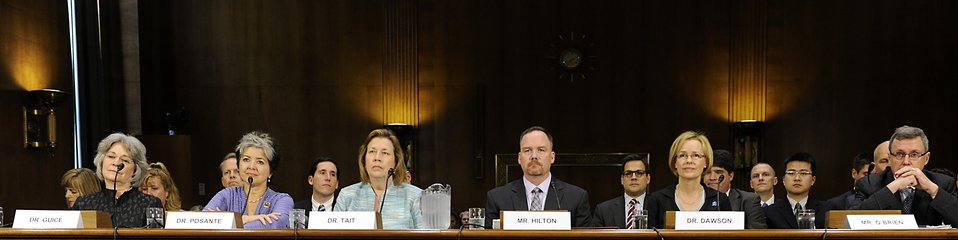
Air Force spouse testifies on military families with special needs

Witnesses testify before the U.S. Senate Armed Services Subcommittee on Personnel in Washington, D.C., June 21, 2012. From the left are Dr. Karen Guice, the principal deputy assistant secretary of defense for health affairs and principal deputy director of the TRICARE Management Activity; Dr. Rebecca Posante, the deputy director of the Department of Defense Office of Community Support for Military Families with Special Needs; Dr. Vera Tait, the associate executive director of the Department of Community and Specialty Pediatrics, American Academy of Pediatrics; Jeremy Hilton, a military spouse, veteran and military family advocate; Dr. Geraldine Dawson, the chief science officer for Autism Speaks and a professor of psychiatry at the University of North Carolina at Chapel Hill; and John O'Brien, the director of healthcare and insurance with the U.S. Office of Personnel Management. Hilton, who is a stay-at-home parent and married to Lt. Col. Renae Hilton, is the Military Spouse of the Year for 2012.